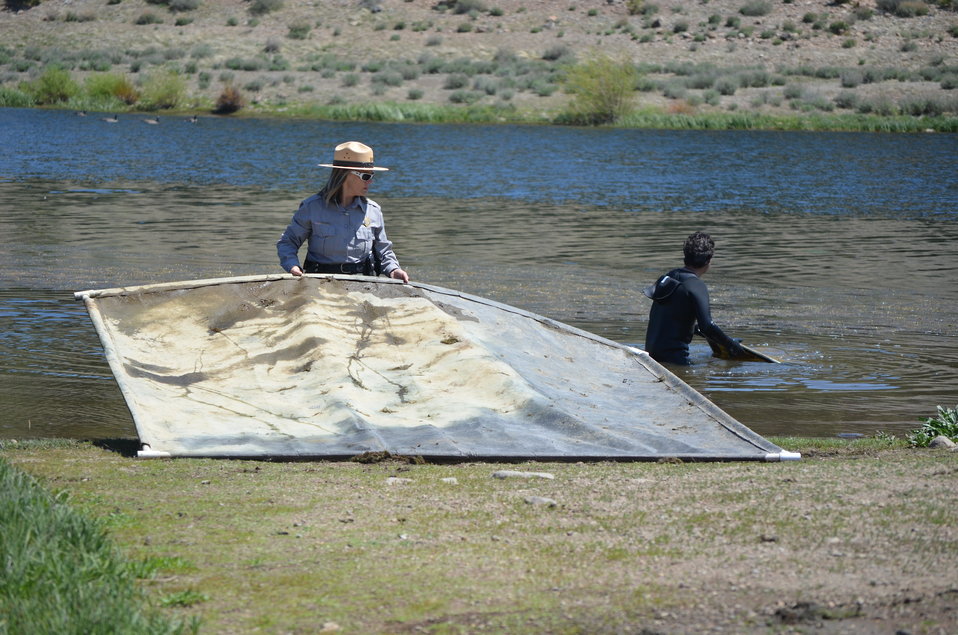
Corps fights invasive weeds at Martis Creek Lake

Sacramento District park ranger, Jacqui Zink (left), and Tahoe Divers Conservancy director, Phil Caterino, replace weed barriers at Martis Creek Lake in Truckee, Calif., during a removal, cleaning and replacement project May 19, 2012. The gas-permeable barriers kill invasive plants by blocking sunlight, but don't disturb other plant and animal species. The U.S. Army Corps of Engineers and Tahoe Divers Conservancy have teamed up to sustainably eradicate invasive milfoil at the lake, managed by the Corps’ Sacramento District.